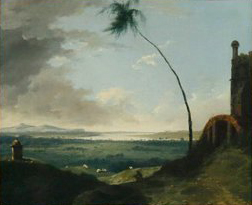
'Tomb and Distant View of Rajmahal Hills' (1782) by William Hodges